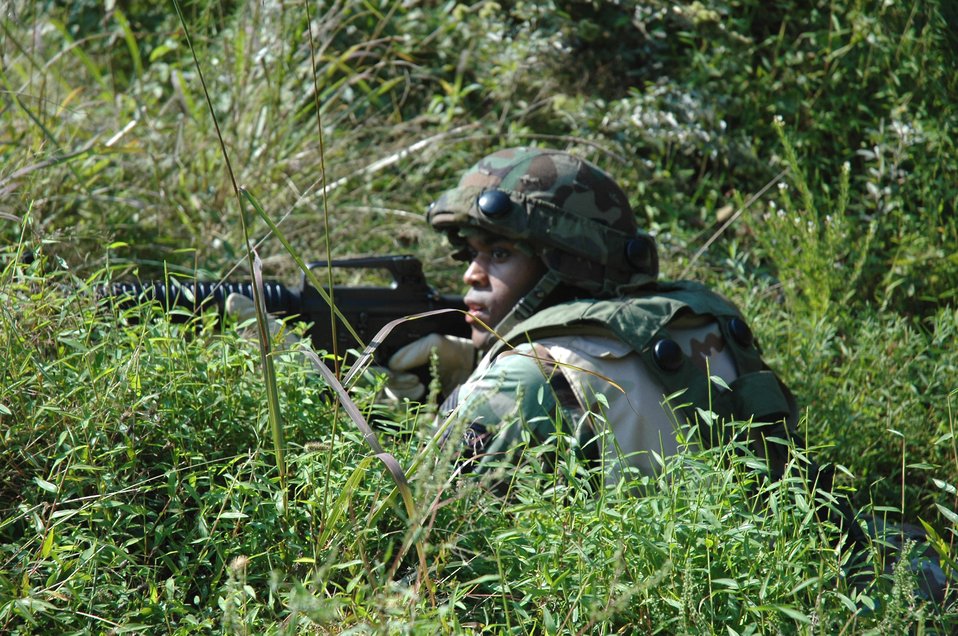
Contingency training sharpens combat skills

A student in the Air Mobility Warfare Center's Advanced Contingency Skills Training Course 06-5 at Fort Dix, N.J., practices combat patrolling during a training session at a tactical range there Sept. 18. More than 60 Airmen are participating in the training course, learning numerous combat-related skills including tactics, media skills, convoy operations, first aid, and field craft. The course is taught by the AMWC's 421st Combat Training Squadron.